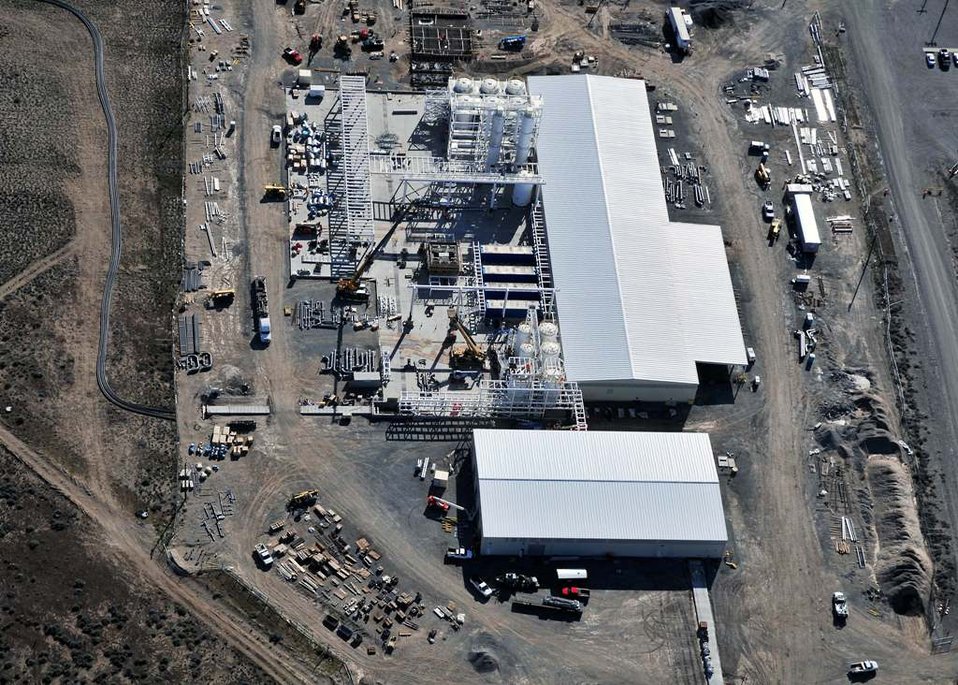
Recovery Act Supports Construction of Site’s Largest Groundwater Treatment Facility

Recovery Act workers in various stages of construction of what will be the largest groundwater treatment facility at the Hanford Site.